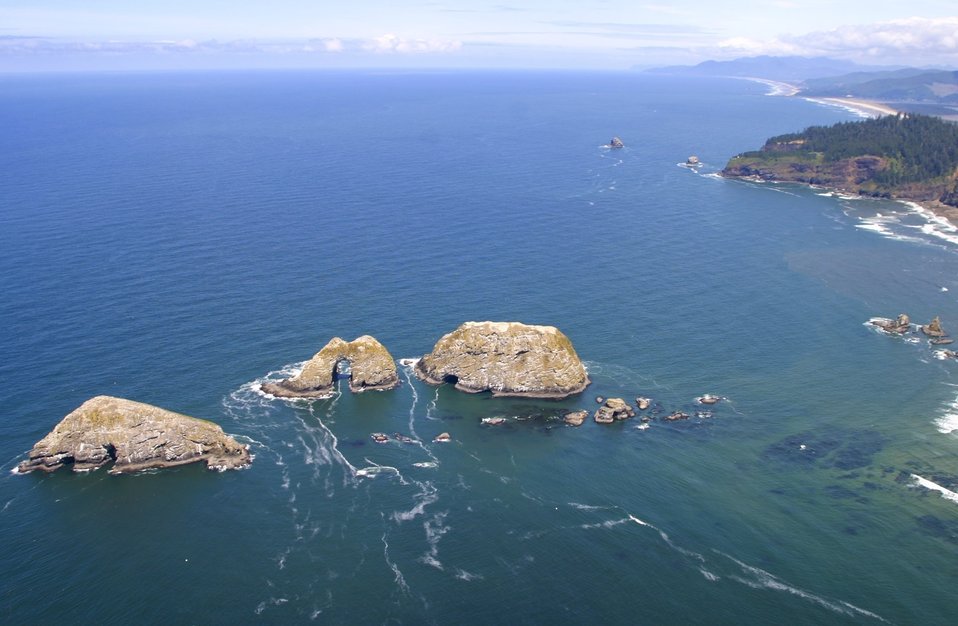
Cape Meares NWR, Three Arch Rocks

An aerial view shows Three Arch Rocks National Wildlife Refuge with Cape Meares National Wildlife Refuge and Oregon Islands National Wildlife Refuge in the background.